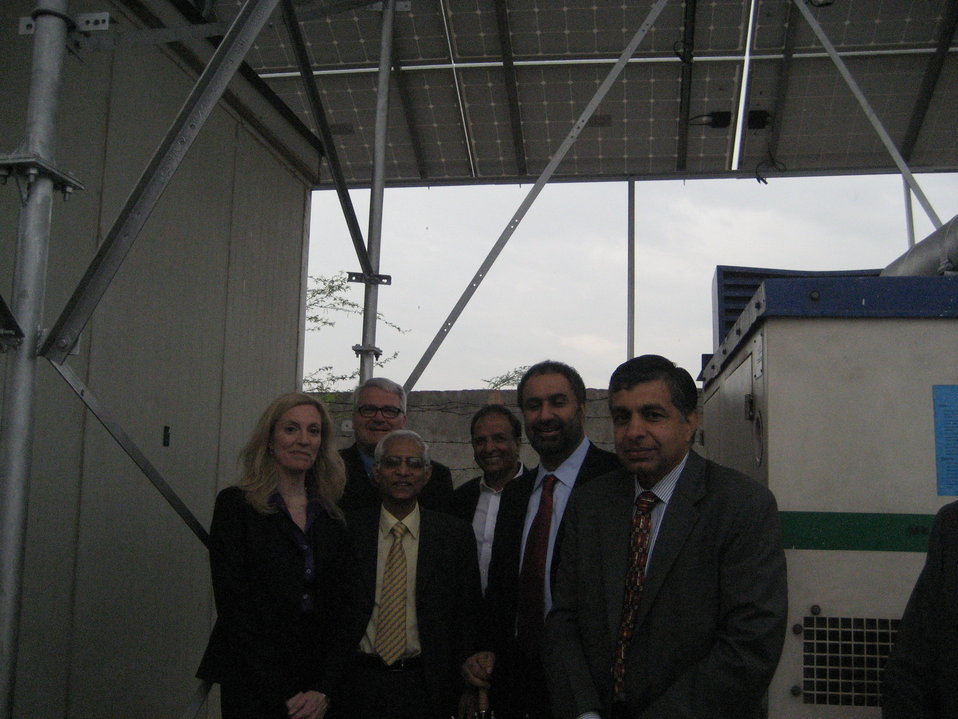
Lael Brainard's Visit to India

On Thursday, the Under Secretary toured a cell phone tower on the outskirts of Delhi to highlight how multilateral development bank assistance and U.S. export credit agencies are advancing environmentally sustainable economic development in India and helping create new markets for U.S. manufactured technology. The site visit showcased how Indian entrepreneurs are replacing diesel generators with a solar hybrid solution as the power source for cell towers. Key components of the solar solution are manufactured in the U.S. As part of the visit, Under Secretary Brainard met with business leaders from the mobile communication, cell phone tower and solar power sectors to discuss the growing opportunity for U.S. and Indian businesses in the solar technology market.